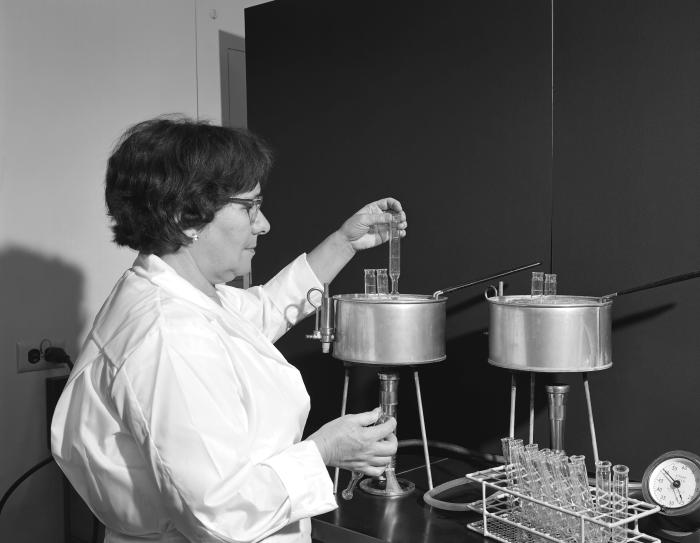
In this 1965 image, a laboratory technician was checking for the presence of a color change in a test using the Benedict method.